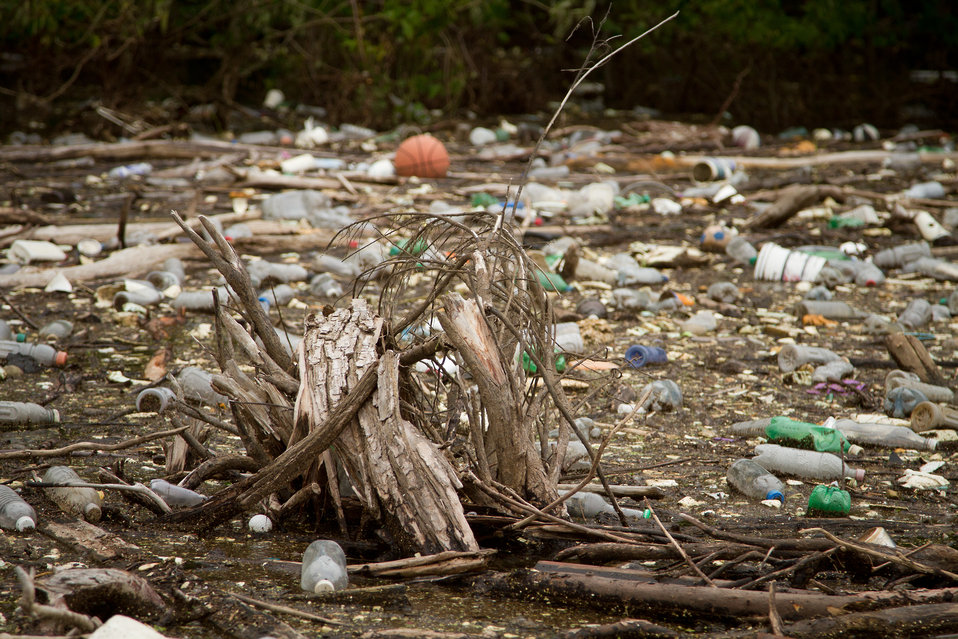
The high flooding of the Mississippi River carried debris from the new shores, plus active storm drains brought with it the litter, all flowing into eddies and corners of lagoons, such as this lake; a tributary to the Mississippi River off the Presidents Island causeway near Memphis, TN on Saturday, May 14. 2011. The cleanup of this is one type of cost associated with floods of this magnitude.